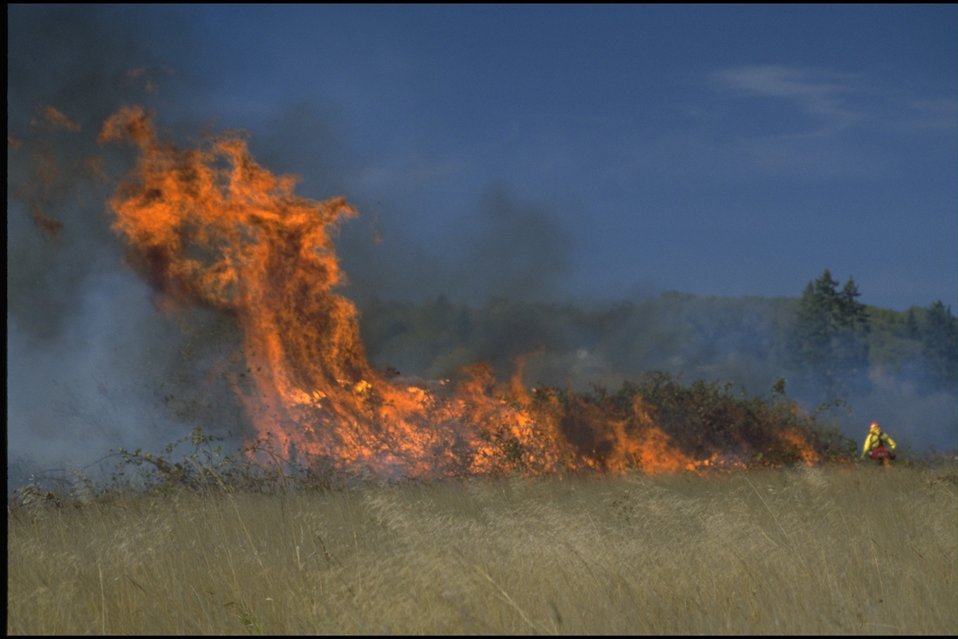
Turtle-Swale Wetland Burn.